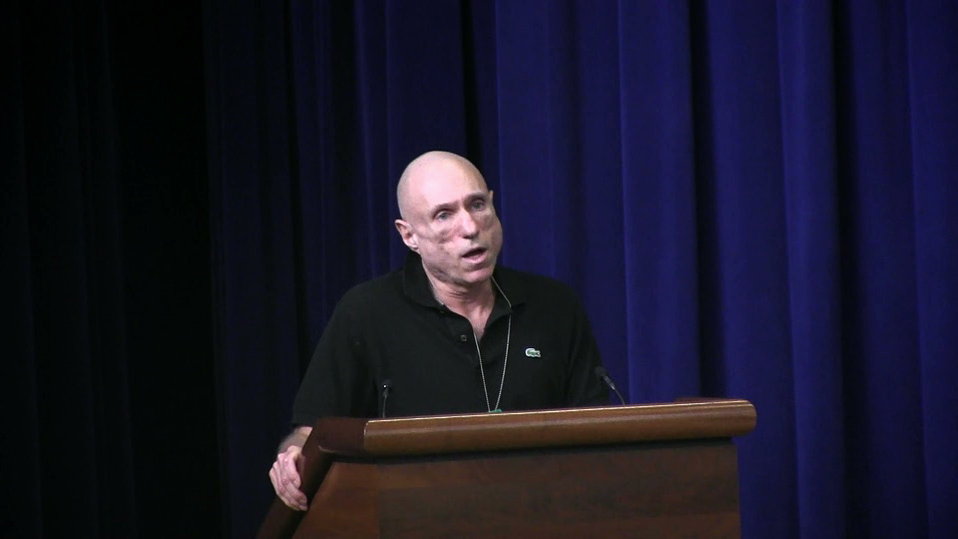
WHDpanel6-1